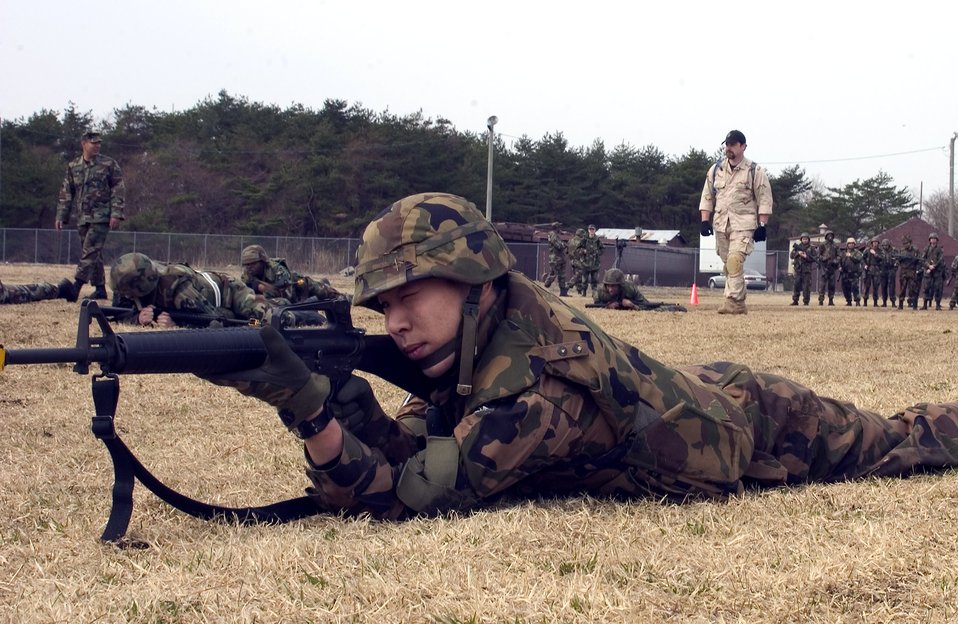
Basic combat skills course offers Airmen lifesaving training

Senior Airman Takao Itoh, a student in the Expeditionary Combat Skills Training, assumes a prone firing position after a high crawl maneuver at Camp Defender on Misawa Air Base, Japan. The ECST course held April 23 to 25 is designed to prepare Airmen for deployment. Airman Itoh is a member of the Japan Air Self-Defense Force.